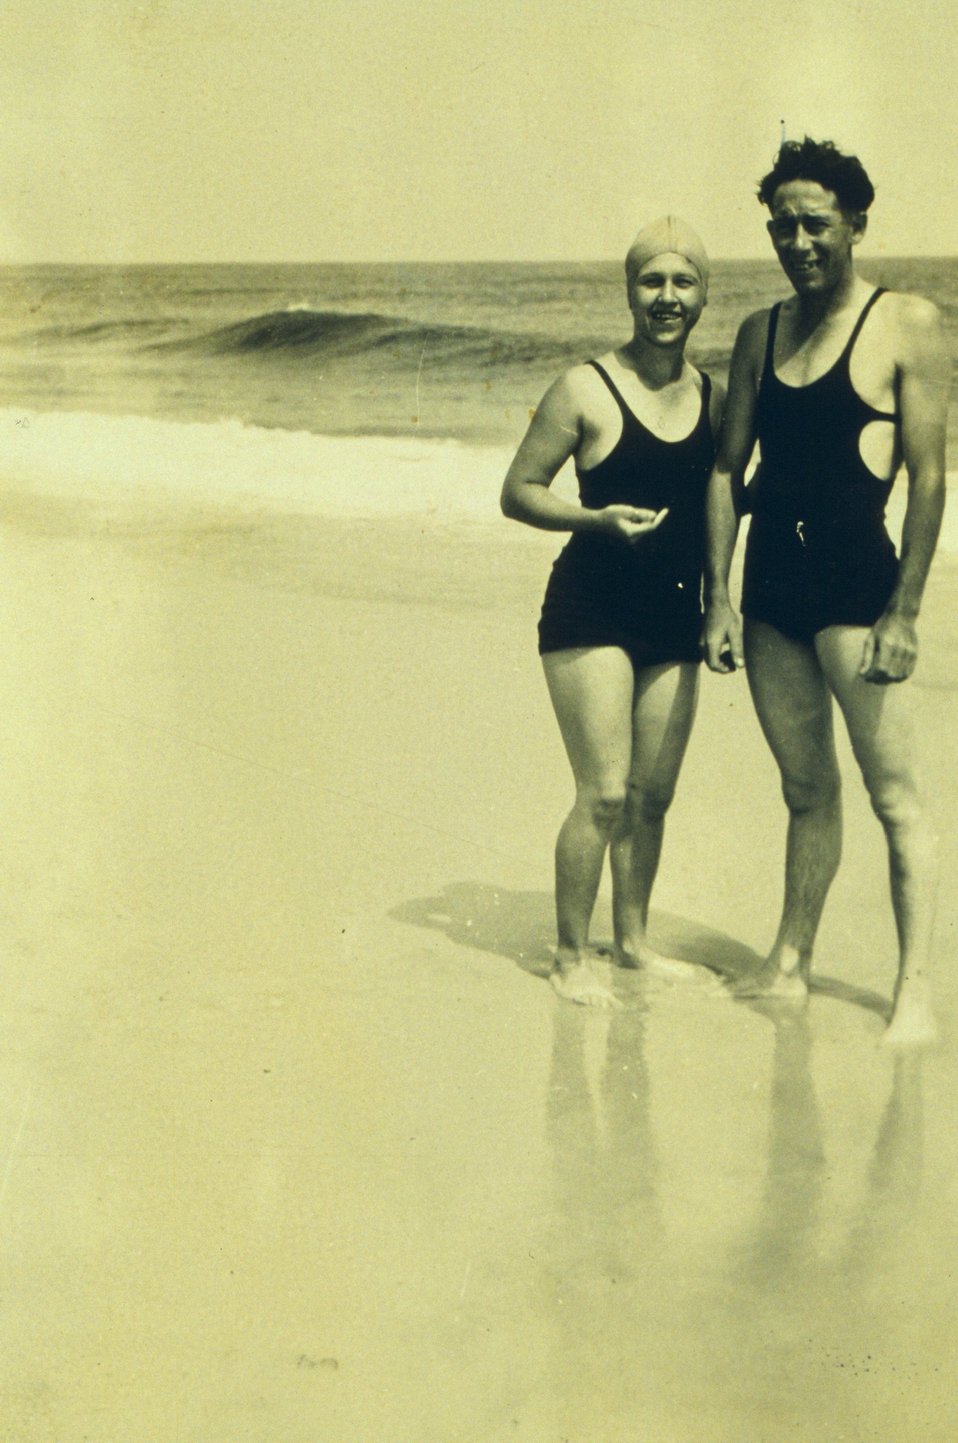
Lieutenant Wilbur Porter and wife Effey at the beach.